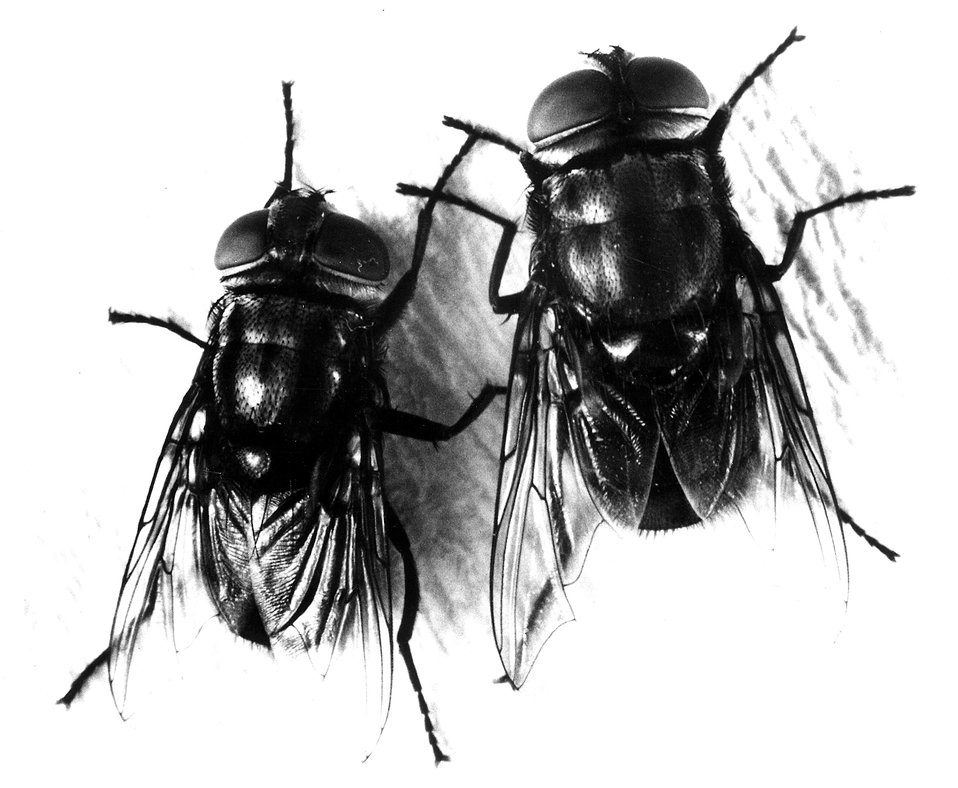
Screwworn fly has a bluish-green body and an orange colored head. Circa 1964.